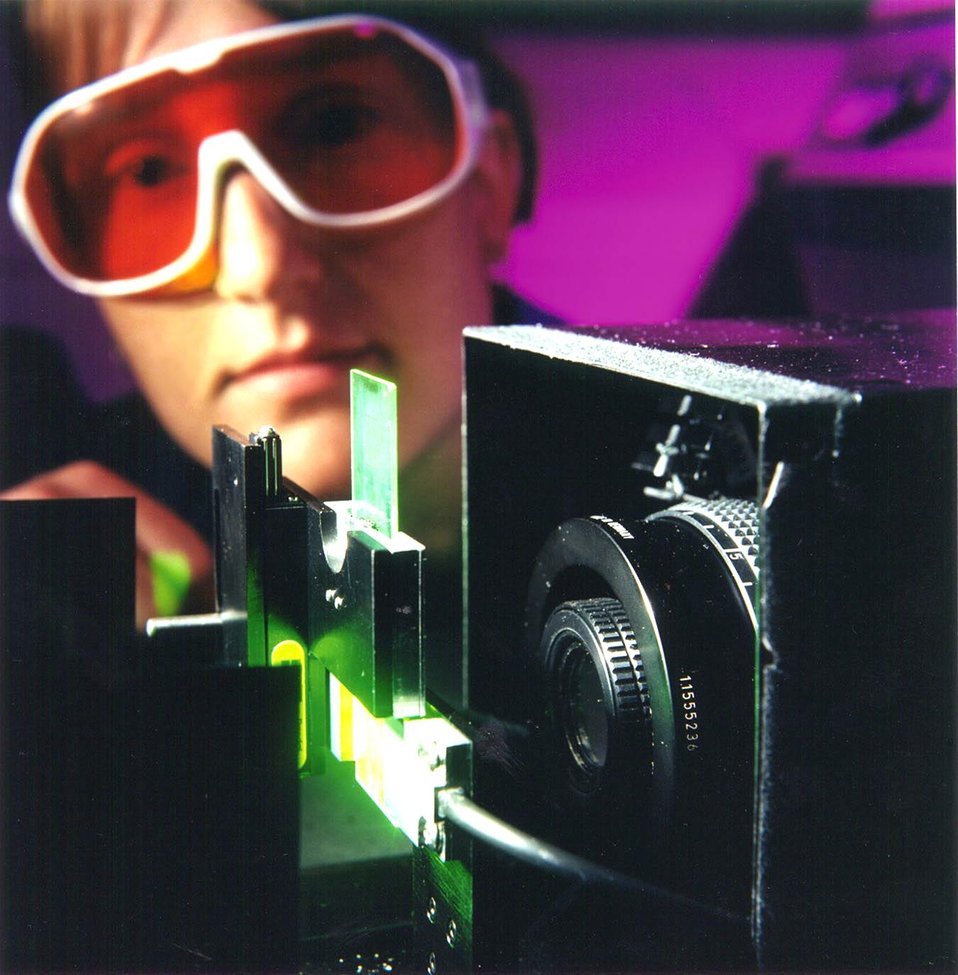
PORTABLE READER BEING DEVELOPED AT ARGONNE TO DETECT AIRBORNE PATHOGENS.

ARGONNE HAS DEVELOPED A MINIATURE SENSOR THAT DETECTS, AT NON-LETHAL CONCENTRATIONS, CHEMICAL POISONS, BACTERIA OR VIRUSES THAT TERRORISTS MAY USE. THIS MICRO-ELECTRONIC 'NOSE' EMPLOYS SOLID STATE CERAMIC METALLIC MATERIALS. ITS SENSOR ARRAYS ARE SMALLER THAN POSTAGE STAMP THAT CAN BE INSTALLED INTO PERSONAL MONITORS OF AT FIXED POSITIONS IN BUILDINGS. THE SENSOR RECEIVED AN R&D 100 AWARD FROM R&D MAGAZINE IN 2002.